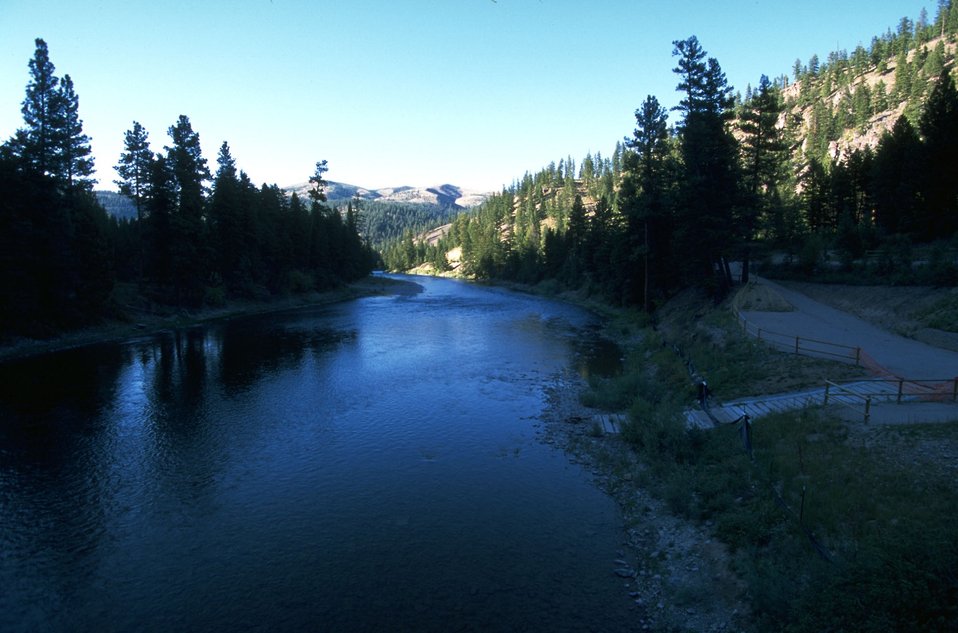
Whitaker Bridge and boat launch on Blackfoot River